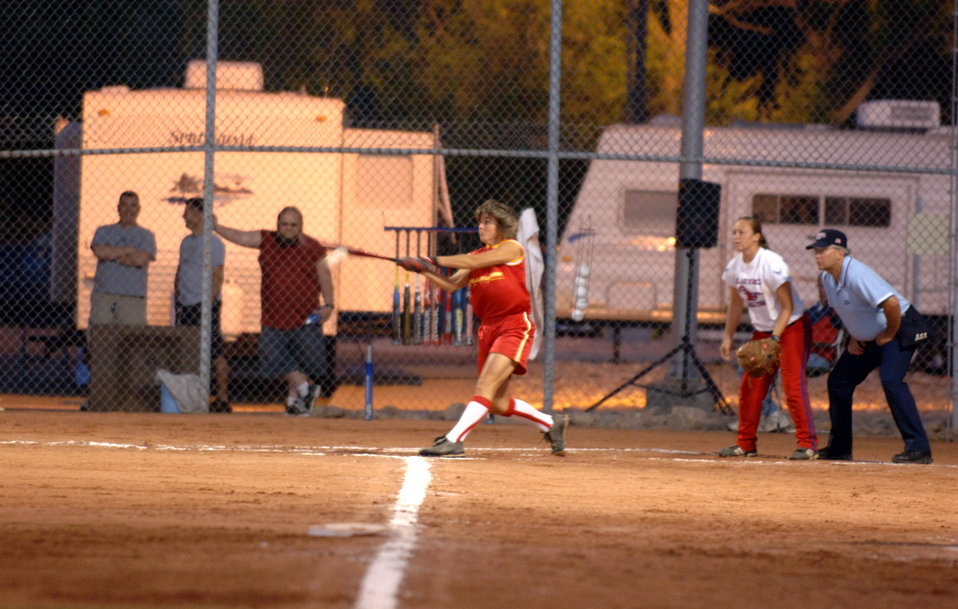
Air Force claims gold in women's softball

Marine Corps Capt. Trish Ruf gets a hit during recent softball action as Senior Airman Carly Edwards looks on Sept. 20 at Hill Air Force Base, Utah. The Air Force team won the All-Armed Forces Women's Softball Championships.